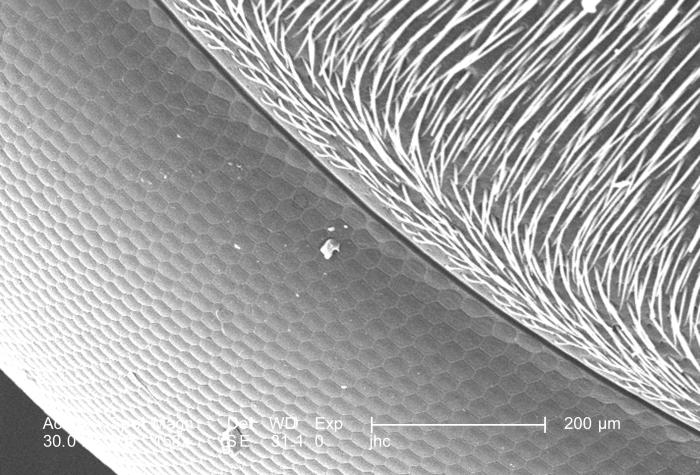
Under a magnification of 158X, this scanning electron micrograph (SEM) depicted the surface of the left compound eye of an unidentified hornet found in the suburbs of Decatur, Georgia. This eye was one of a pair, which along with other sensorial structures such as the hair-like 'setae', seen here coating the insect's head, provided the hornet with data indicative of changes encountered in its environment such as chemical, thermal, and tactile queues.